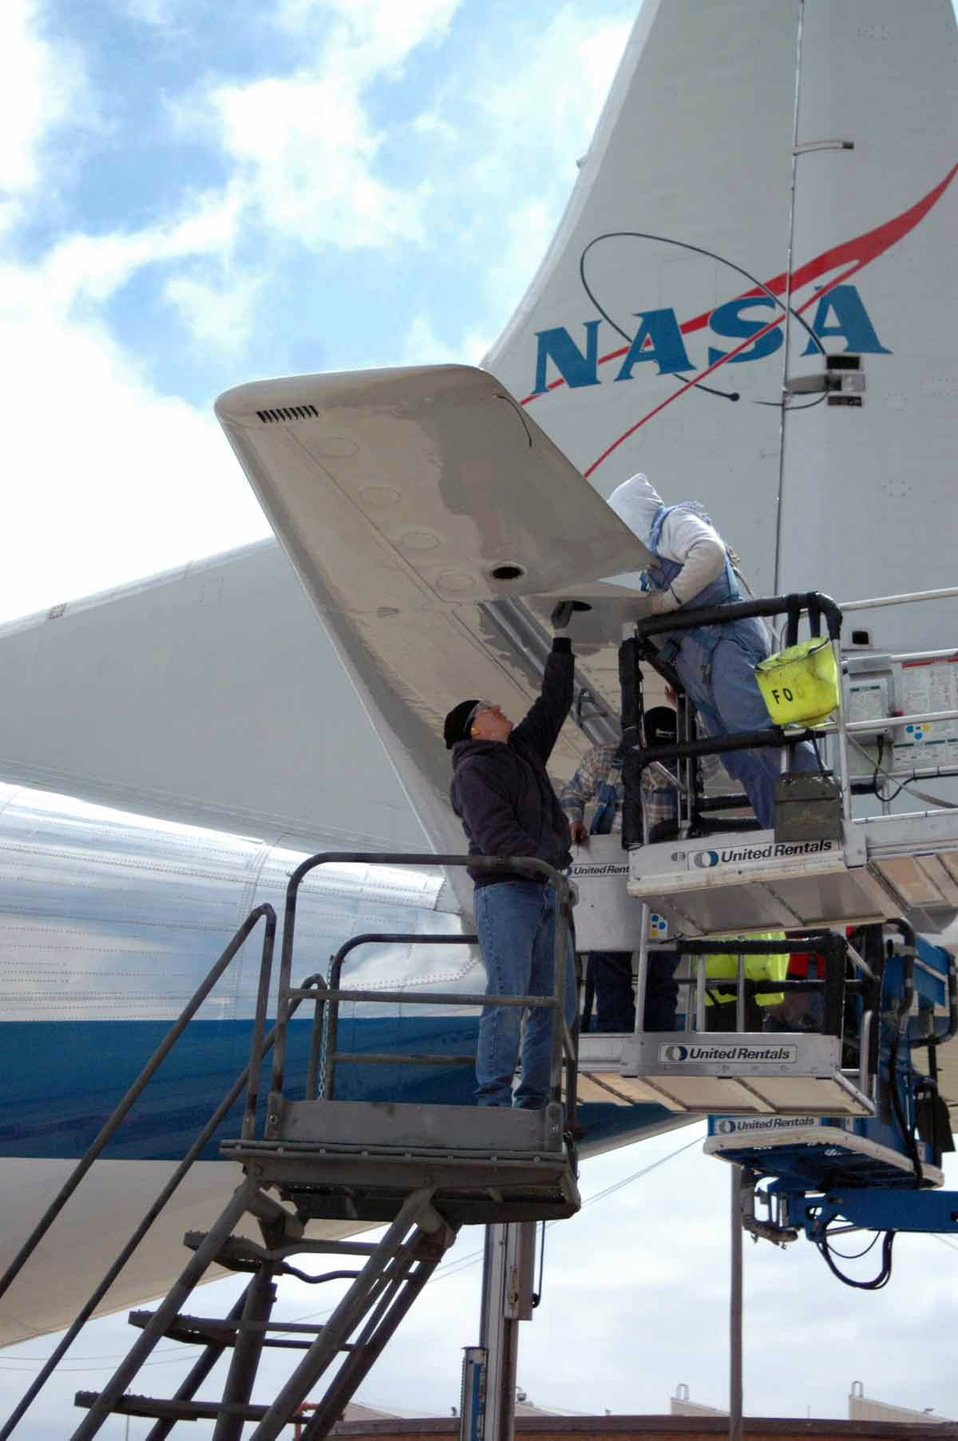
Inspecting the Super Guppy

Maintainers at Tinker Air Force Base, Okla., work on an elevator of NASA's Supper Guppy. NASA officials brought the unique aircraft to Tinker AFB because of the capability of Tinker's workforce to inspect and repair the large aircraft.